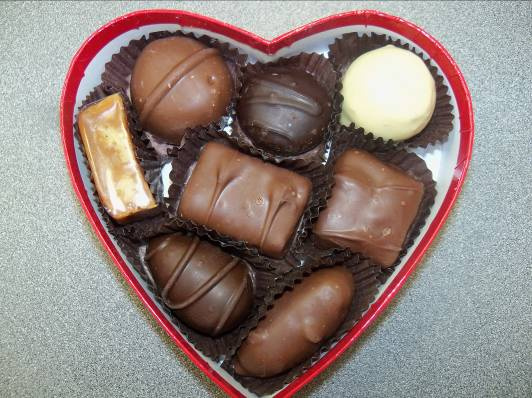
RECALLED - Assorted Chocolates

February 19, 2013 – Product Recall – Fannie May Issues A Voluntary Recall Of Its 4.0 Oz. Heart-shaped Box Of Assorted Chocolates Due To Undeclared Peanuts.